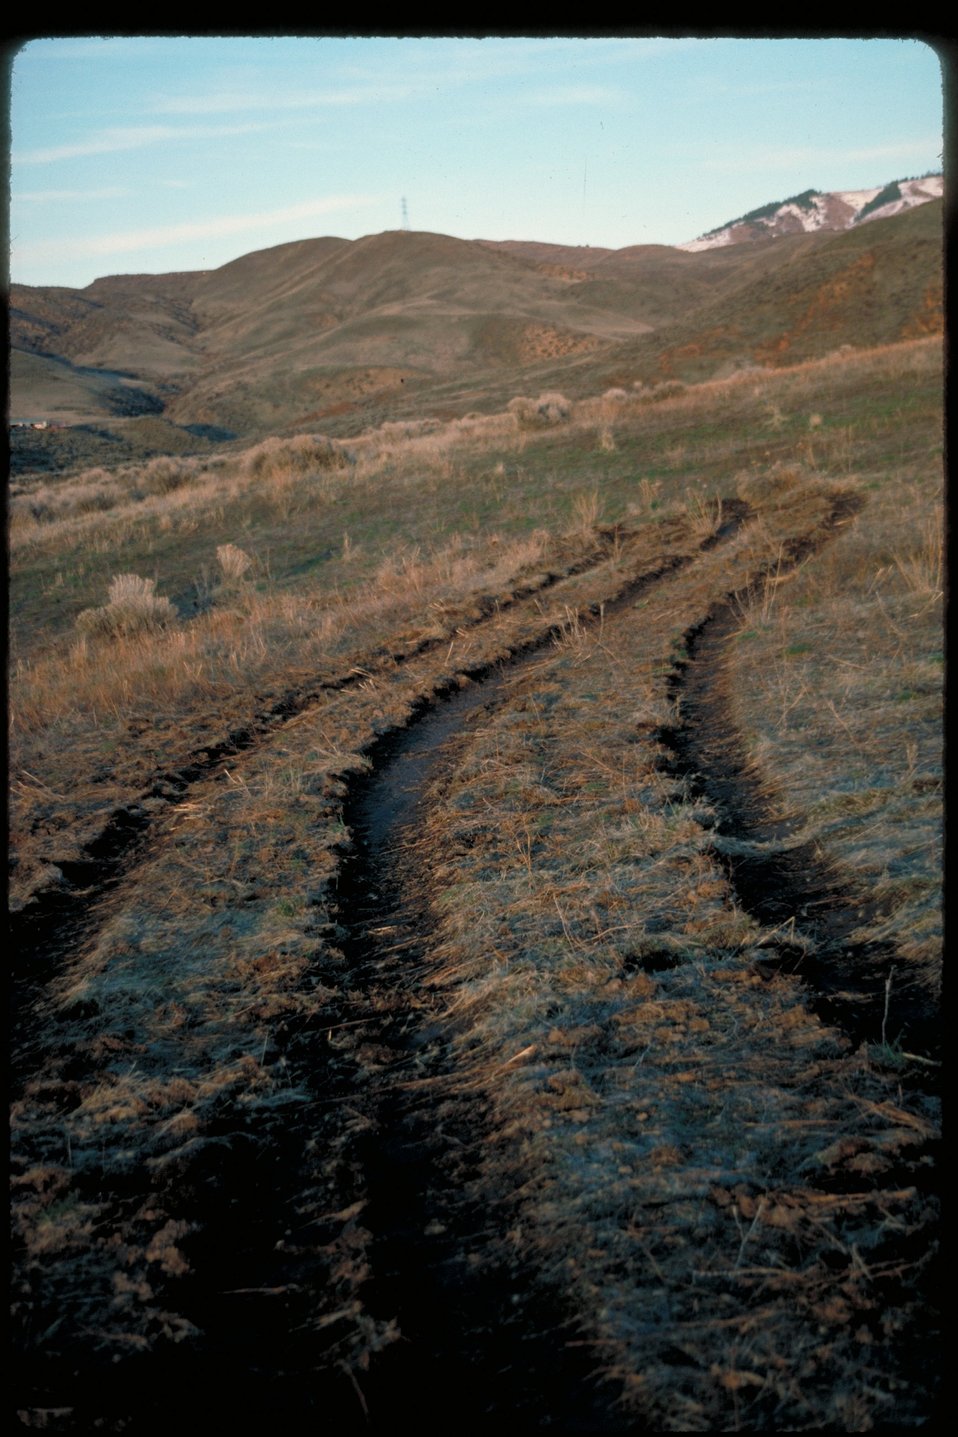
Trails Boise Front Four Rivers Field Office LSRD Lower Snake River District